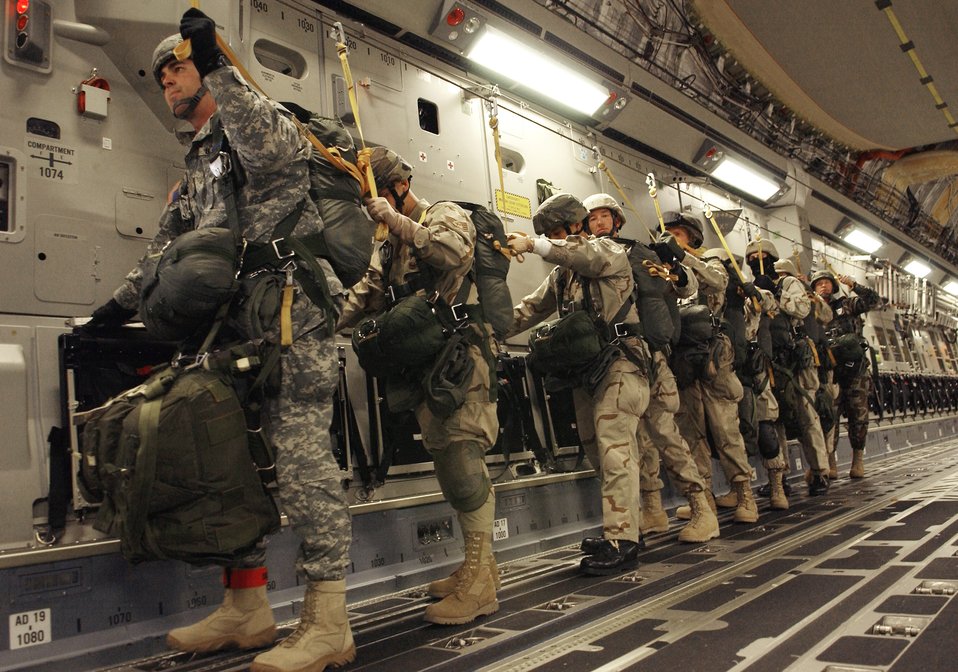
Ready to jump!

Airman from the 820th Civil Engineer Squadron's Red Horse team and Army Airborne Soldiers are ready to jump from a C-17 Globemaster III Dec. 8 during a Mission Employment Exercise held at Nellis Air Force Base, Nev. Mission employment is the final event prior to Weapons School graduation.